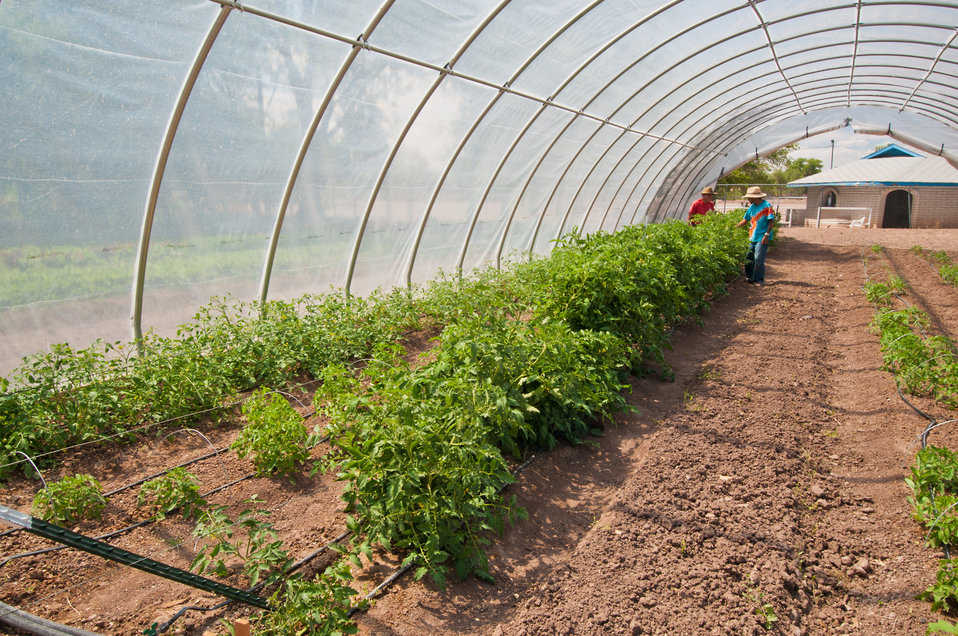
Silverio Sevilla and Fidel Gonzales tend to tomatoes and peppers grown by Los Jardines Institute Farm, Albuquerque, NM on Monday, Jun. 10, 2013. Los Jardines Institute Farm a local sustainable farm was able to construct a high tunnel house with a loan from the La Montanita Co-op. La Montanita Co-op offers loans to local farmers and food producers for development. La Montanita Co-op is a 17,000 member socially responsible, locally owned food cooperative that supports a stable market for local farmers and producers of sustainable and organic regional/local agriculture in Albuquerque, New Mexico. The co-op has a distribution center and two stores in Albuquerque; Valley and Nob Hill and stores in Santa Fe and Gallup, NM.